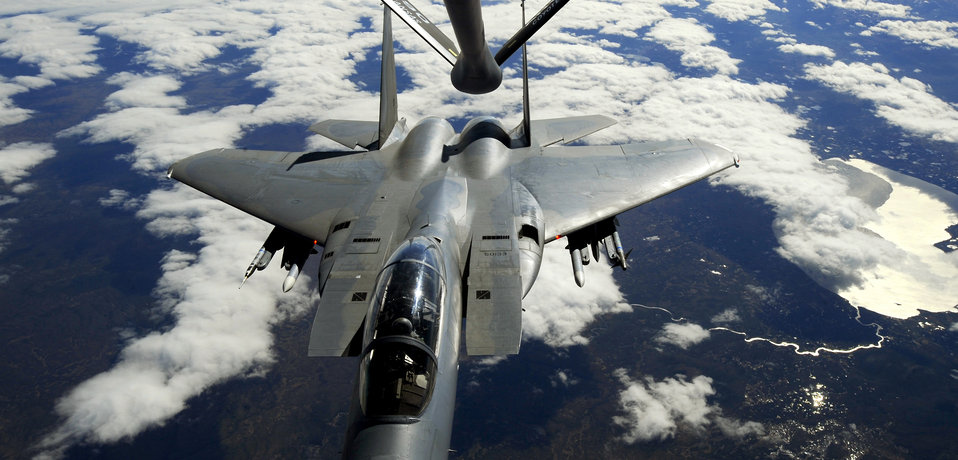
Fighters refuel over Alaska

An F-15 Eagle from Elmendorf Air Force Base, Alaska, moves into position to receive fuel from a KC-135 Stratotanker from Kansas Air National Guard's 190th Air Refueling Wing. The refueling took place over Alaska May 26, 2010.